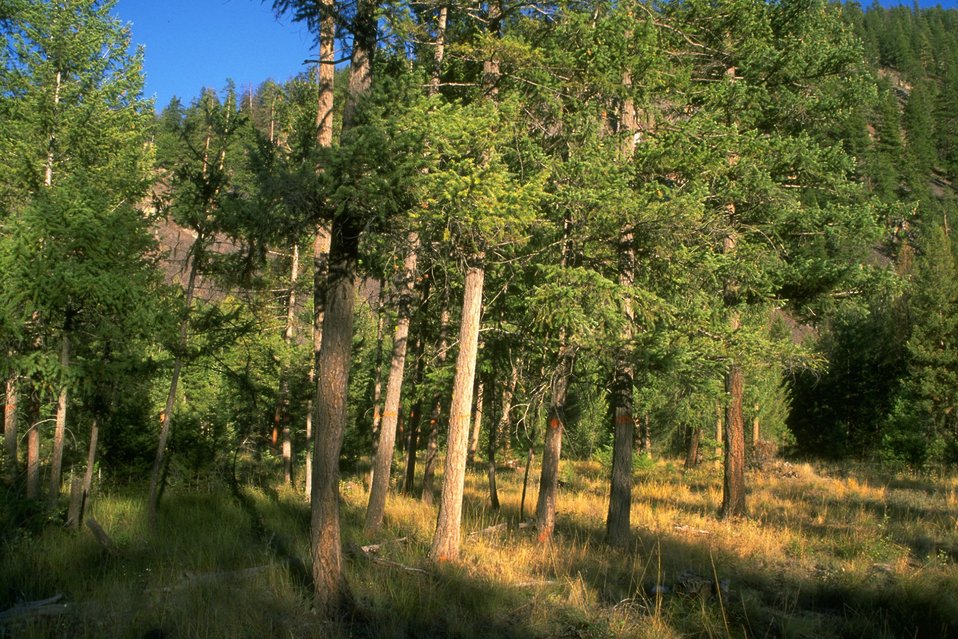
Fir trees marked for harvest to help restore old growth pine along the Blackfoot River